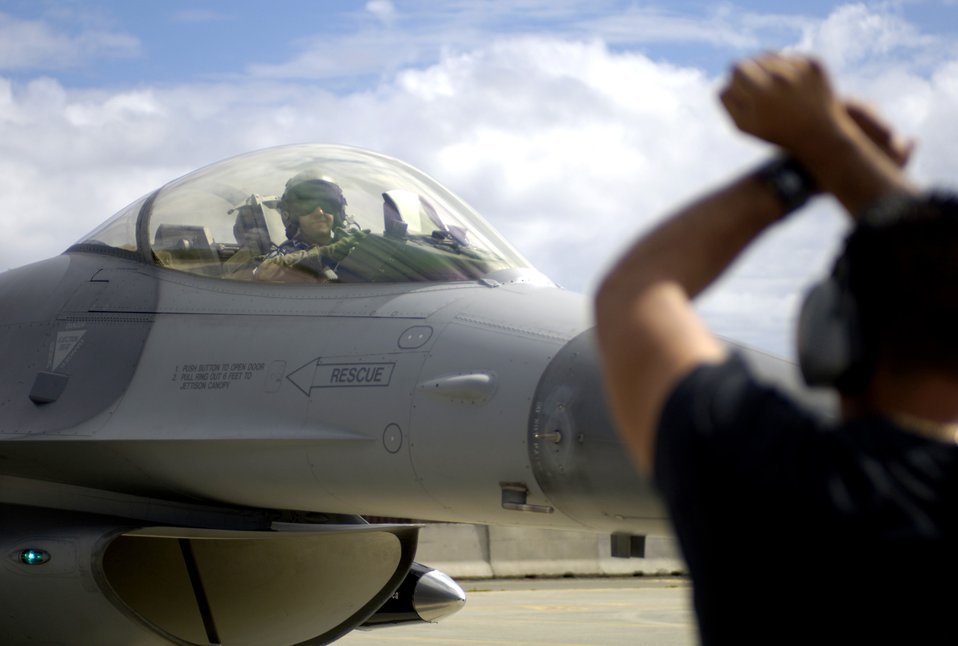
Sentry Aloha

Master Sgt. Carlos Rodriguez marshals an F-16 Fighting Falcon to its parking spot at Hickam Air Force Base, Hawaii, Sept. 6. Six F-16s and crews from the Texas Air National Guard's 149th Fighter Wing are participating in Exercise Sentry Aloha. The exercise brings dissimilar combat assets to Hickam to train with the Hawaii Air National Guard's 199th Fighter Squadron.